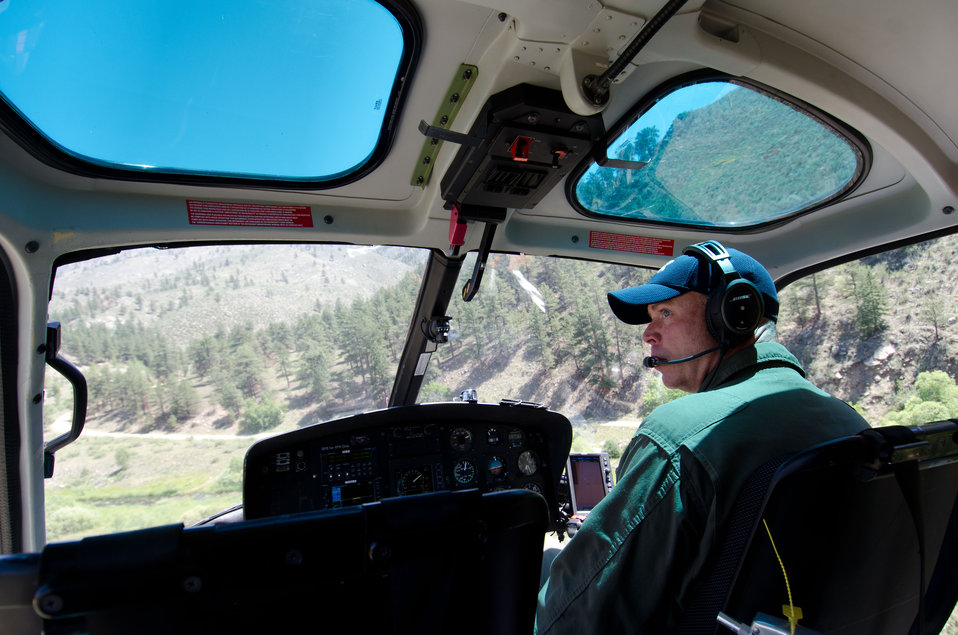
Mountain Air Chief Pilot Tim Booth, a U.S. Marine Corps veteran, prepares to take off after refueling his aircraft on Friday, July 20, 2012, at Seaman Reservoir, near Fort Collins, Colo., during the continuing aerial application of straw to mitigate soil and ash runoff from the mountainous terrain leading to Seaman Reservoir, drinking water resource for the City of Greeley. The A-Star Model B (3-blade rotor) aircraft launched from a landing zone at the foot of the reservoir spillway. The 100-150-foot cable hold and release loads of certified straw weighing 1,400 – 2,000 pounds. 4-person load crews and heavy equipment operators unloaded 1,000 pound straw bales from tractor trailer rigs, stack them near the pickup point, then bring the bales onto cargo nets, open then loosen and adjust the load on cargo nets for helicopters to lift and drop them onto barren, burned out tributary lands. Forest service lands received straw, while private and other lands receive a seed mix and straw to promote ground cover plant growth on ash-covered lands. In total, 1,800 tons of straw will be applied during the 14-day operation. One quarter of the cost was paid by the City of Greeley and the U.S. Department of Agriculture funded the remainder. The Hewlett Gulch Fire was started by a camper’s alcohol stove, on May 14, at the saddle of a picturesque mountain ridge along the Hewlett Gulch Trail of Poudre Canyon, in the Roosevelt National Forest, 60 miles north of Denver. At it’s more than 400 firefighters were battling fires being pushed by 50 mph winds that helped blacken over 12-square-miles of dry ground cover, brush and trees. Many of the trees were already dead and tinder dry from beetle-kill. The water in the reservoir remains clean and clear, while downstream water flow has gone from famous Colorado clear water to nearly black flows of water heavily laden with ash, silt, and burnt debris that recent thunderstorms have already washed down from the mountainsides.